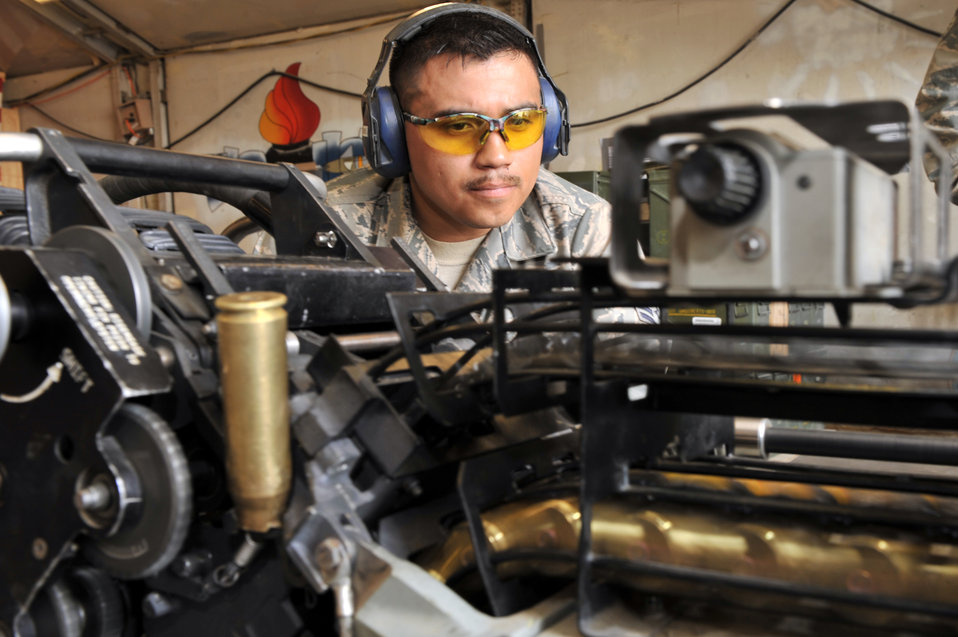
Ammo airmen supply the fight

Staff Sgt. Raul Vierness watches 20 millimeter rounds cycle through a linkless ammunition loading system March 23, 2011, at Bagram Airfield, Afghanistan. Once the round has gone through the LAL system, they can be inspected. Sergeant Vierness is an ammunition supply point technician assigned to the 455th Expeditionary Maintenance Squadron.